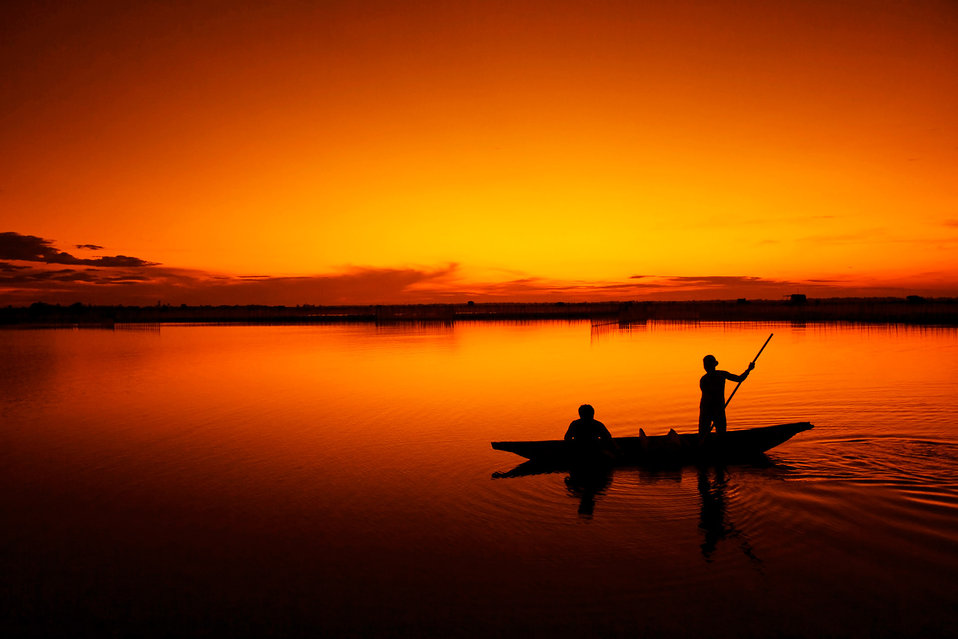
Working in sunrise

A couple of fishermen are fishing in a lagoon in hue province, vietnam..